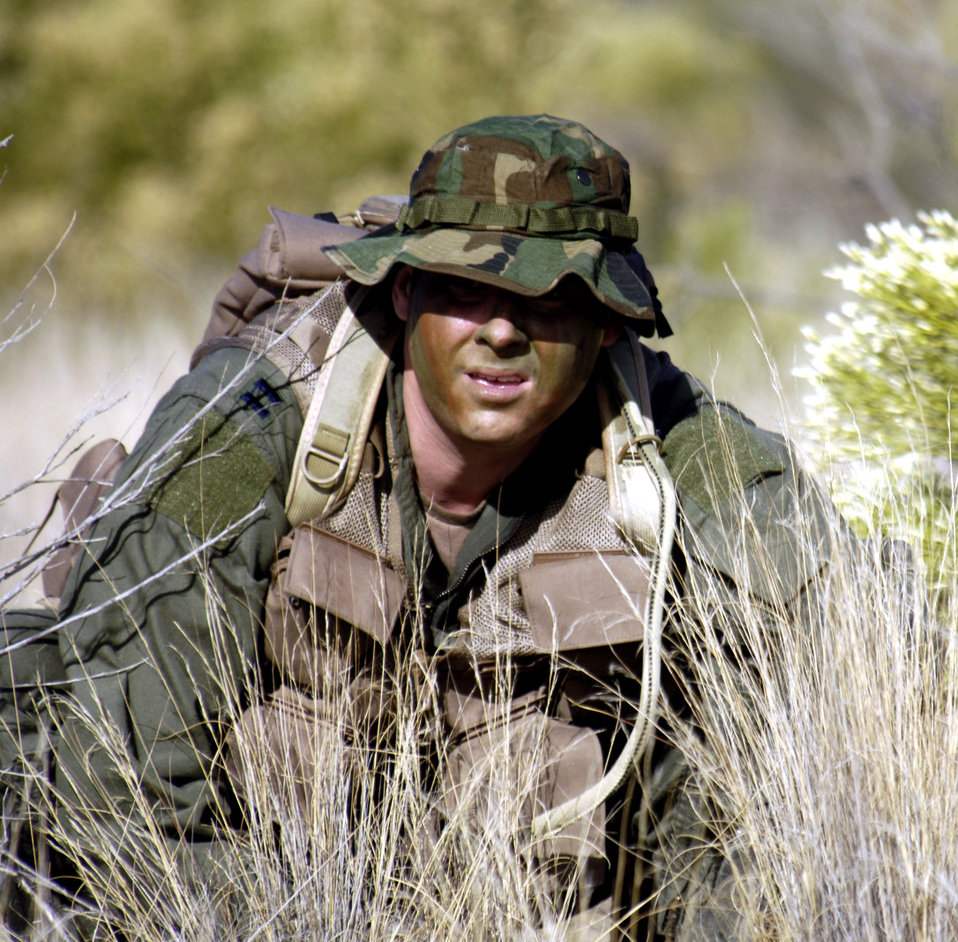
Evasion

DAVIS-MONTHAN AIR FORCE BASE, Ariz. (AFPN) -- Capt. Chris Occhinzzo evades aggressors during combat survival training. The training is given to every pilot and aircrew member. Captain Occhinzzo is an EC-130H Compass Call navigator from the 43rd Electronic Combat Squadron.